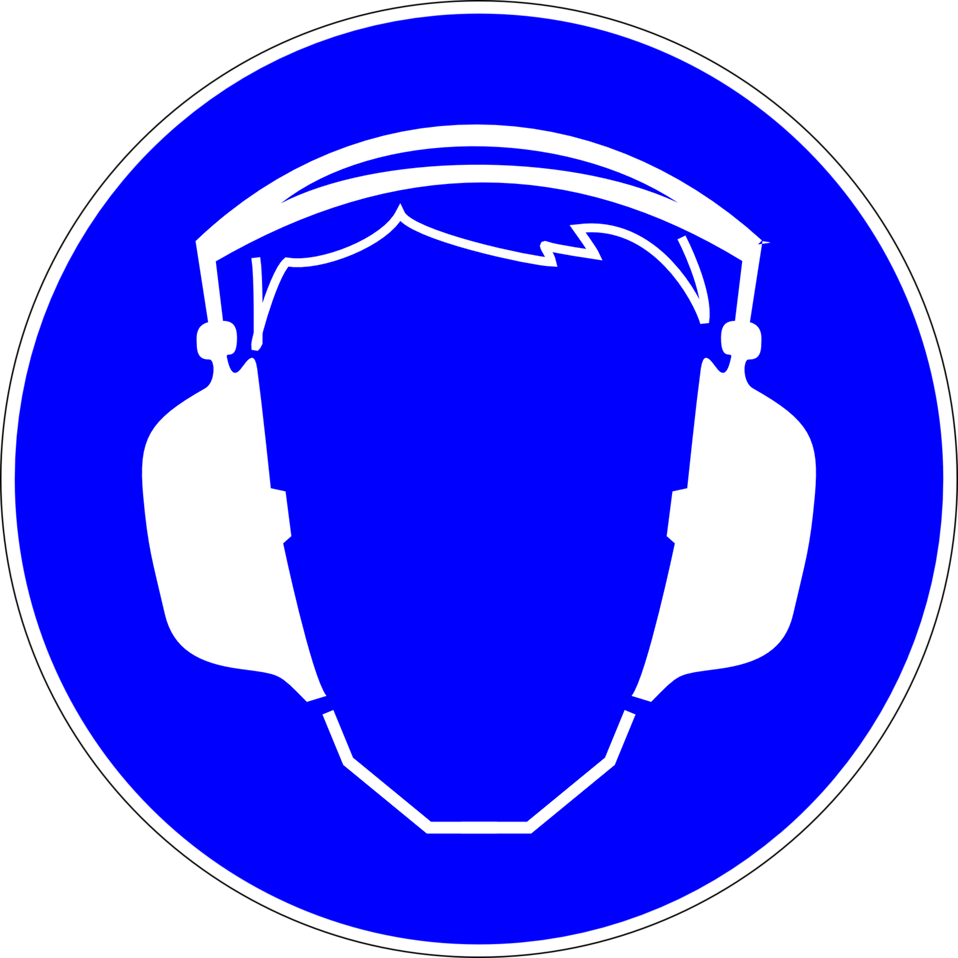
Deutsch: Gehörschutz benutzen, Gebotszeichen D-M003 nach DIN 4844-2 Use hearing protection, mandatory action sign sign D-M003 according to German standard DIN 4844-2